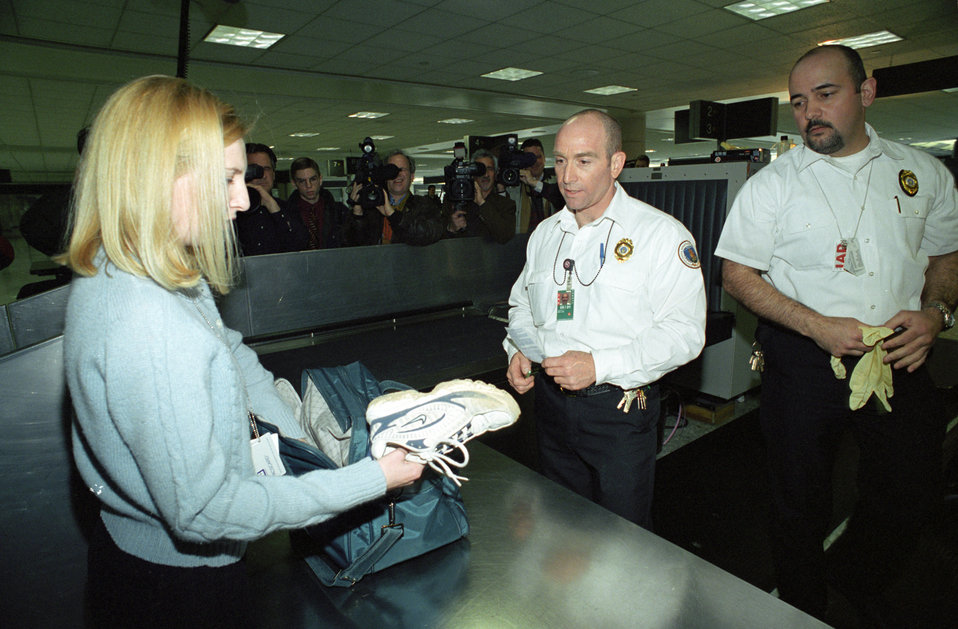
An incoming traveler is asked to remove her shoes at Washington Dulles International Airport in Chantilly, VA on March 14, 2001. Foot and Mouth Disease can be brought into the U.S. through contraband food and from travelers’ shoes. American tourists and European visitors that have trod through contaminated fields risk bringing the devastating disease into this country. The U.S. Department of Agriculture’s (USDA) Animal and Plant Health Inspection Service (APHIS) working with U.S. Customs and Border Protection carefully monitor incoming visitors and returning American tourists.